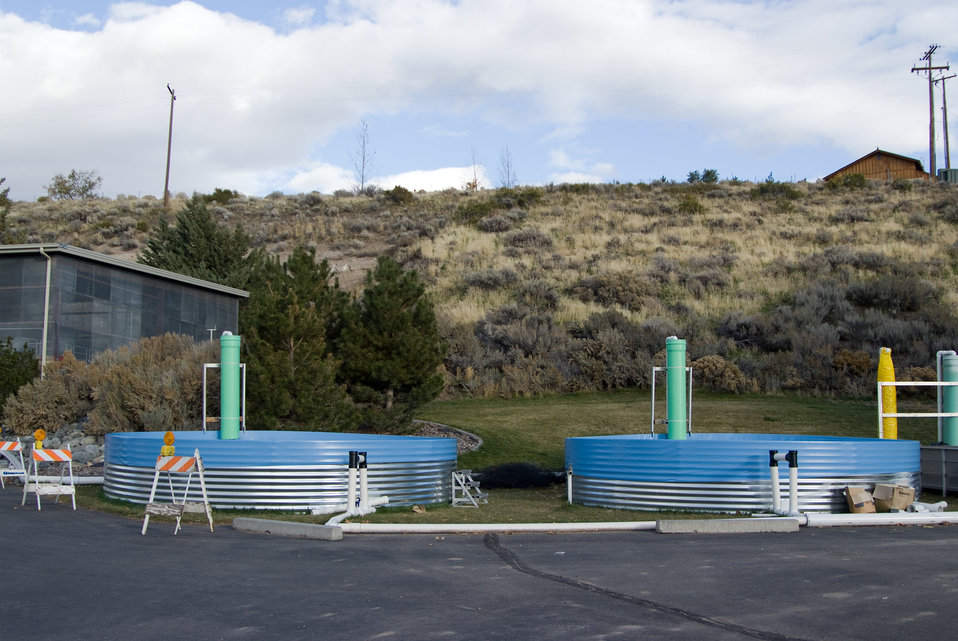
Lahonton National Fish Hatchery. The American Recovery & Reinvestment Act enabled the USFWS to rehabilitate water well pumps for fish production.

The Lahontan National Fish Hatchery Complex was authorized in 1956 to mitigate the loss of the Pyramid Lake fishery. Since 1992 it has provided oversight for the recovery of two fish native to the area, the Lahontan cutthroat trout (Onchorynchus clarkii henshawi) and the cui-ui (Chasmistes cujus).

In the Tahoe/Truckee basin the cui-ui is currently endangered and the Lahontan cutthroat trout is threatened. These fish played key historical roles in the culture and economy of the region. The cui-ui sucker is found only in the alkaline Pyramid Lake and the lower Truckee River. They were a major food source for local native American tribes throughout the 1800s and are still important to the culture of several tribes in the region. The largest of the cutthroat family, LCT were known to reach more than 40 pounds and regularly migrated 114 miles in the Truckee River between Lake Tahoe and Pyramid Lake.